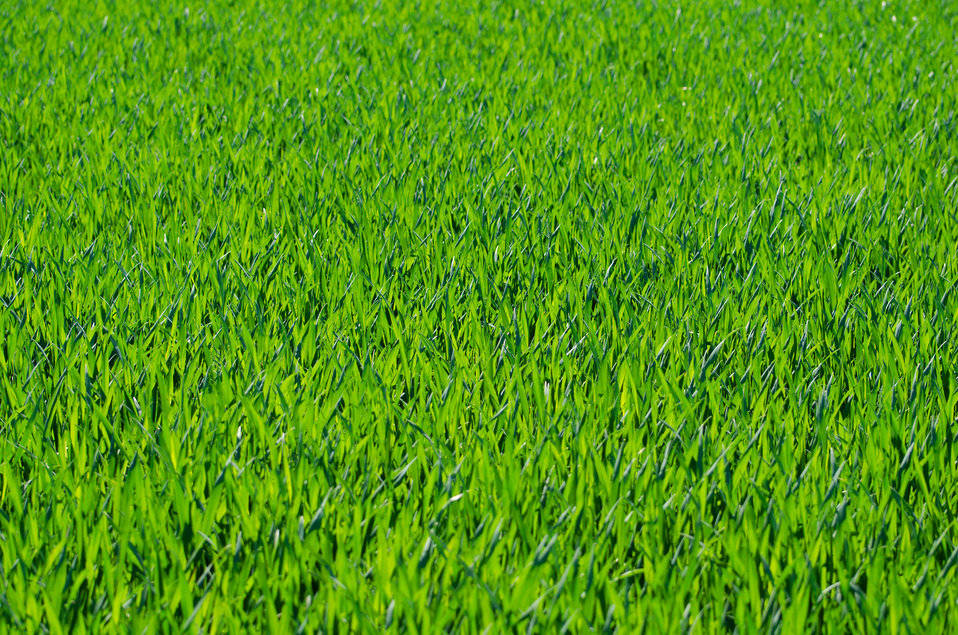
Grass - background.